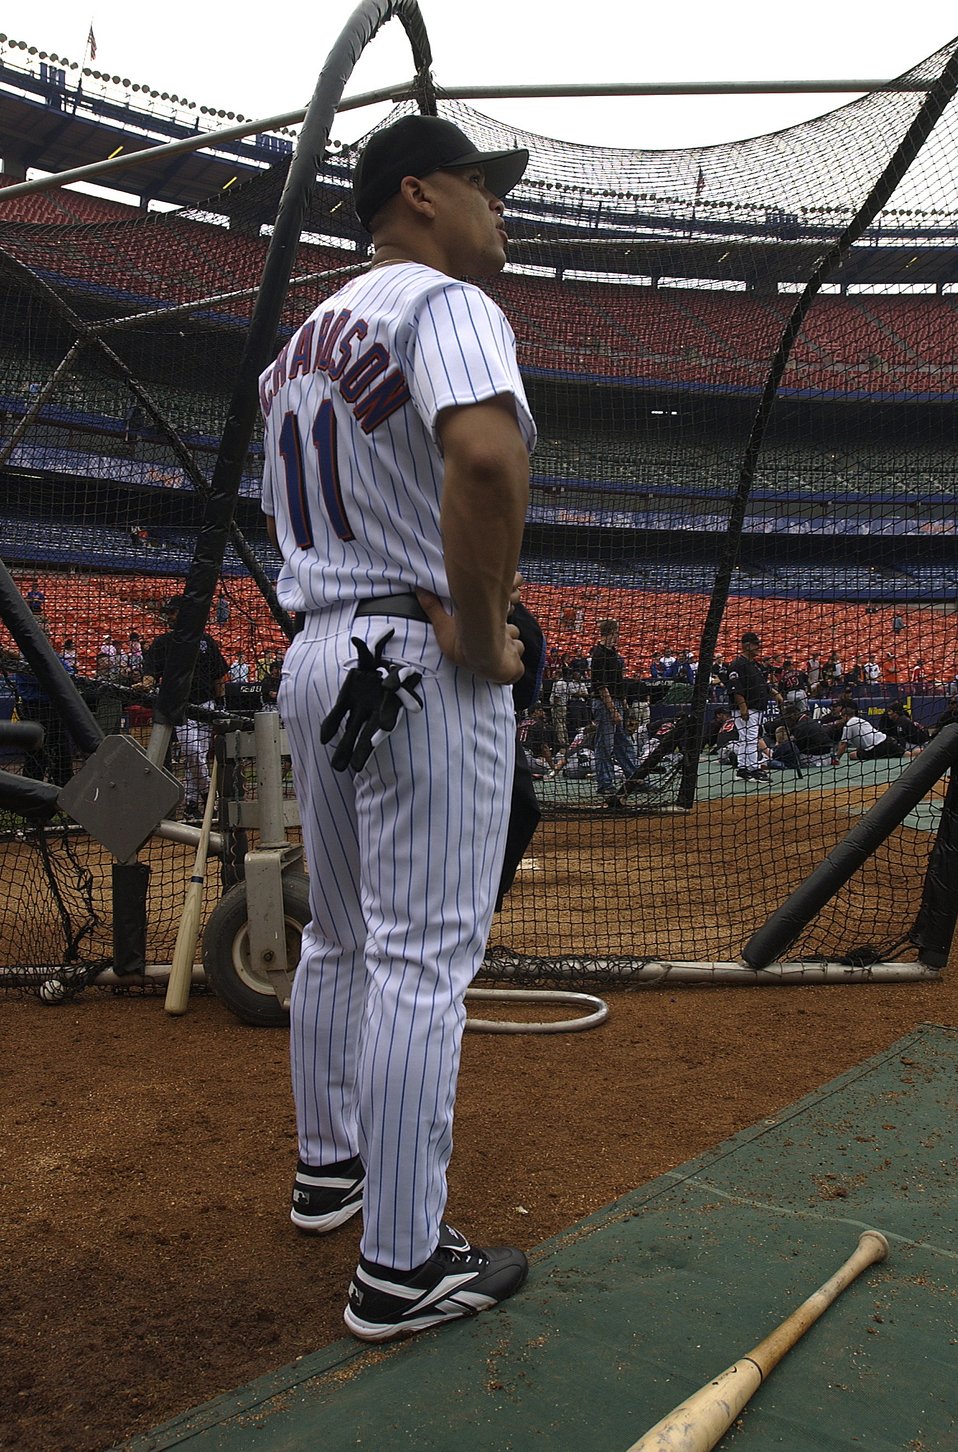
From Airman to Met

NEW YORK -- Senior Airman Chardo Richardson waits his turn for batting practice with the New York Mets on June 22. He was at Shea Stadium for the second part of a job swap with Mets pitcher Al Leiter. The pitcher was a boom operator for a day at McGuire Air Force Base, N.J., on May 24. Airman Richardson is a boom operator with the 32nd Air Refueling Squadron at McGuire.